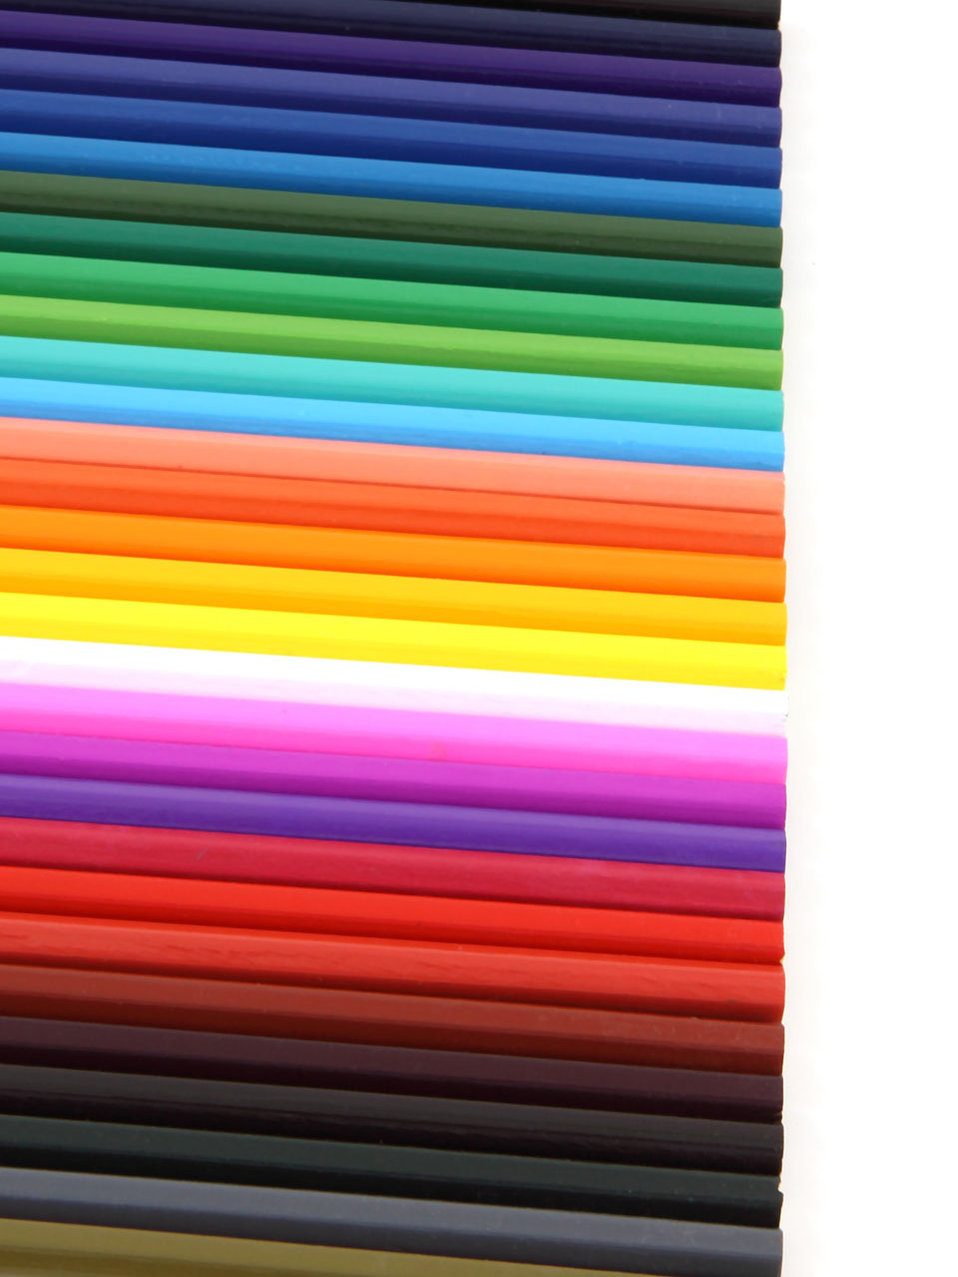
Kids pencils

Colorful pencil ends on white background.